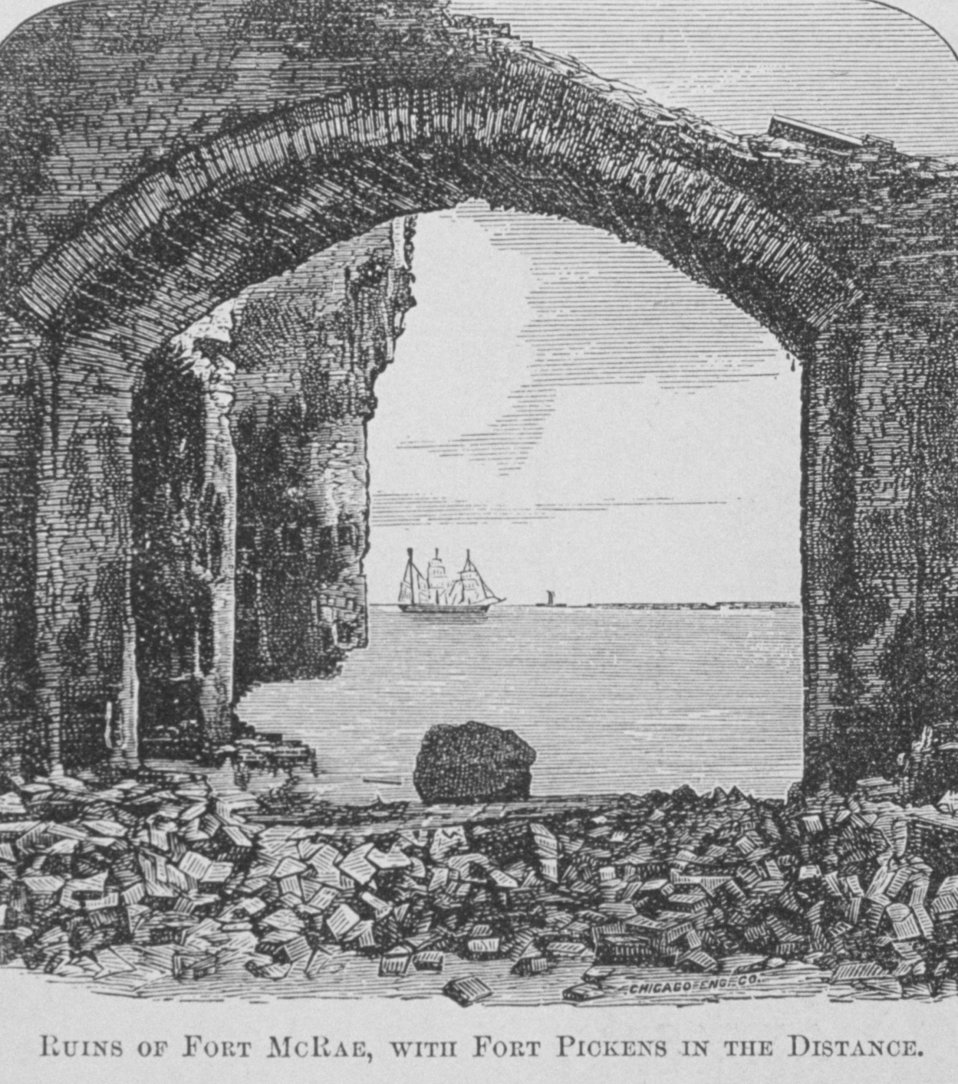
Ruins of Fort McRae with Fort Pickens in the Distance, Pensacola Harbor - in 'Florida for Tourists, Invalids, and Settlers' by George M. Barbour, 1881.